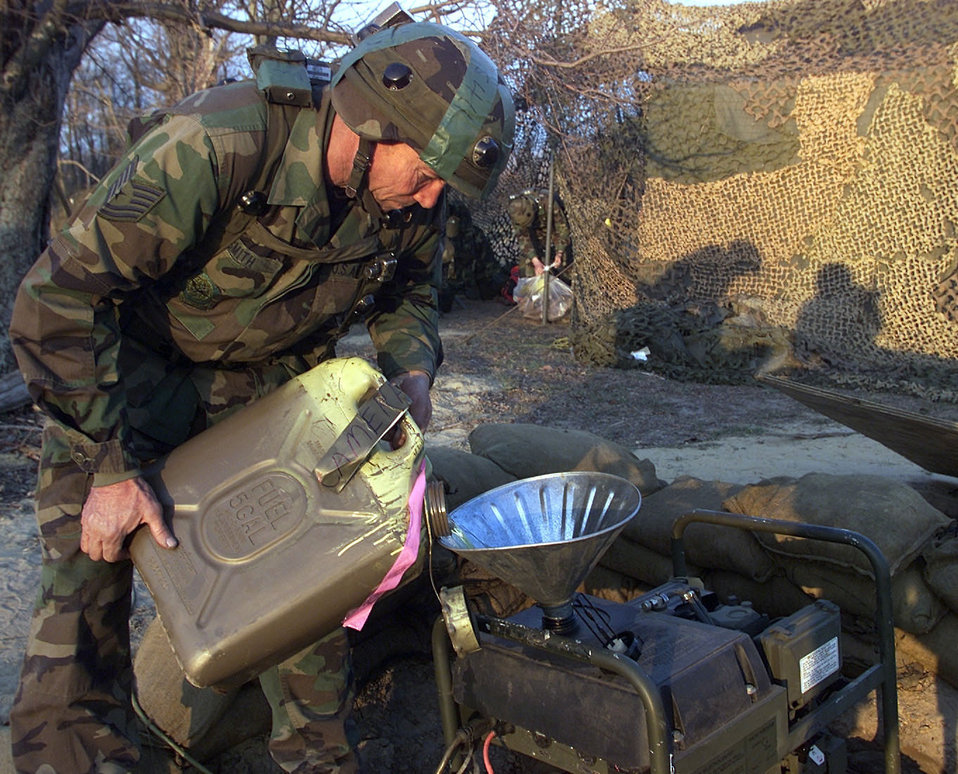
Fuel for the fight

FORT DIX, N.J., -- Tech. Sgt. Tom Smith, from the 4th Combat Camera Squadron, March Air Reserve Base, Calif., refuels generators that provide power to the Combat Camera work center during a field training exercise here Mar. 7, 2000. Smith is deployed to the Air Mobility Warfare Center at Ft. Dix for this deployment training also known as the Phoenix Readiness Combat Course.